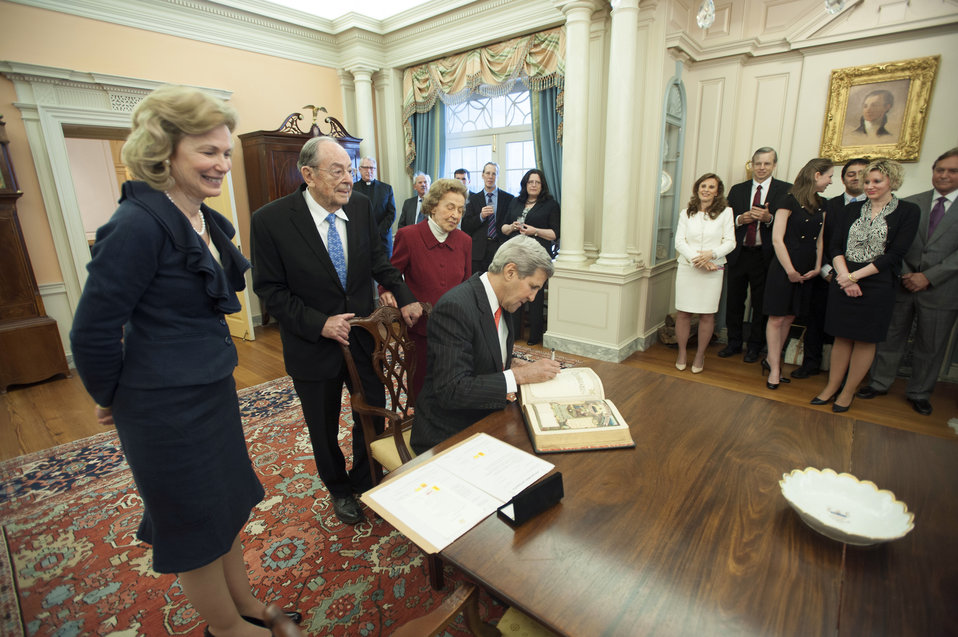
Secretary Kerry Writes a Note in the Birx Family Bible

U.S. Secretary of State John Kerry writes a note in the Birx Family Bible as the family looks on at the swearing-in ceremony for Deborah Birx to become Ambassador-at-Large and Coordinator of the United States Government Activities to Combat HIV/AIDS at the U.S. Department of State in Washington, D.C., on April 25, 2014.